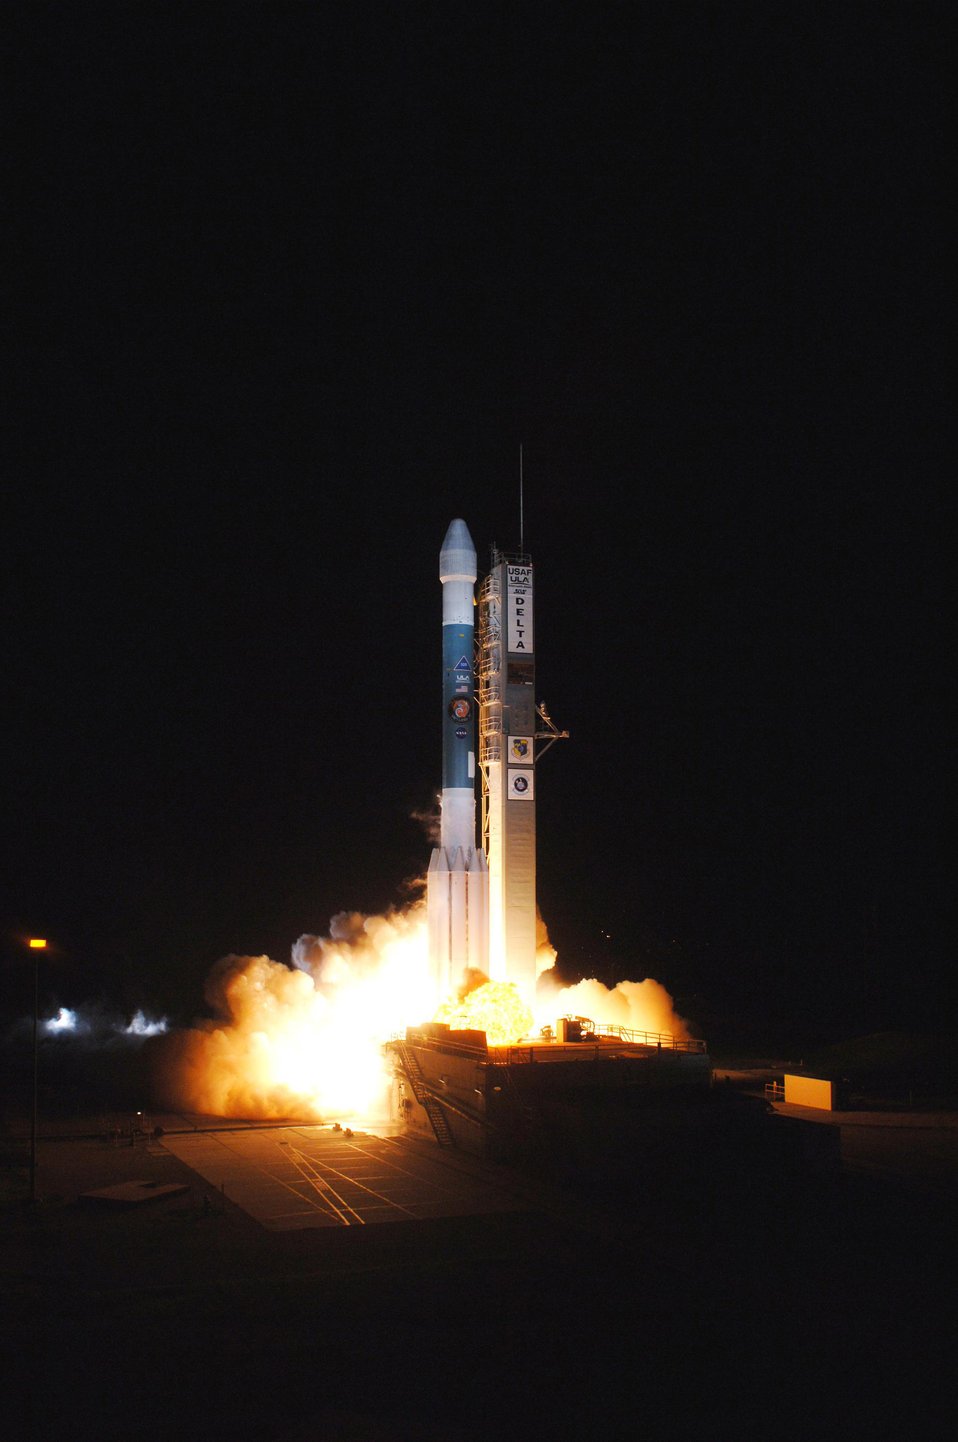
Air Force supports launch of NASA mission to Mars

The Delta II rocket carrying NASA's Phoenix Mars lander lifts off Aug. 4 amid billows of smoke on Pad 17-A at Cape Canaveral Air Force Station, Fla. Phoenix will land in icy soils near the north polar, permanent ice cap of Mars and explore the history of the water in these soils and any associated rocks, while monitoring polar climate. Landing on Mars is planned in May 2008 on arctic ground where a mission currently in orbit, Mars Odyssey, has detected high concentrations of ice just beneath the top layer of soil.